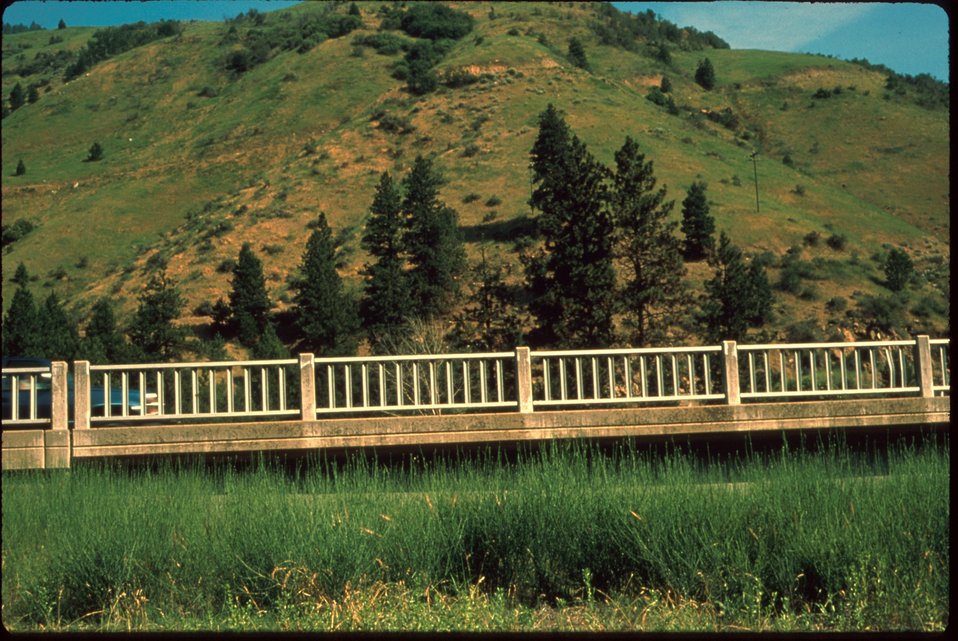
Where Rush Skeleton Weed was first discovered in 1955 Banks Idaho Idaho vegetation Plants in BLM